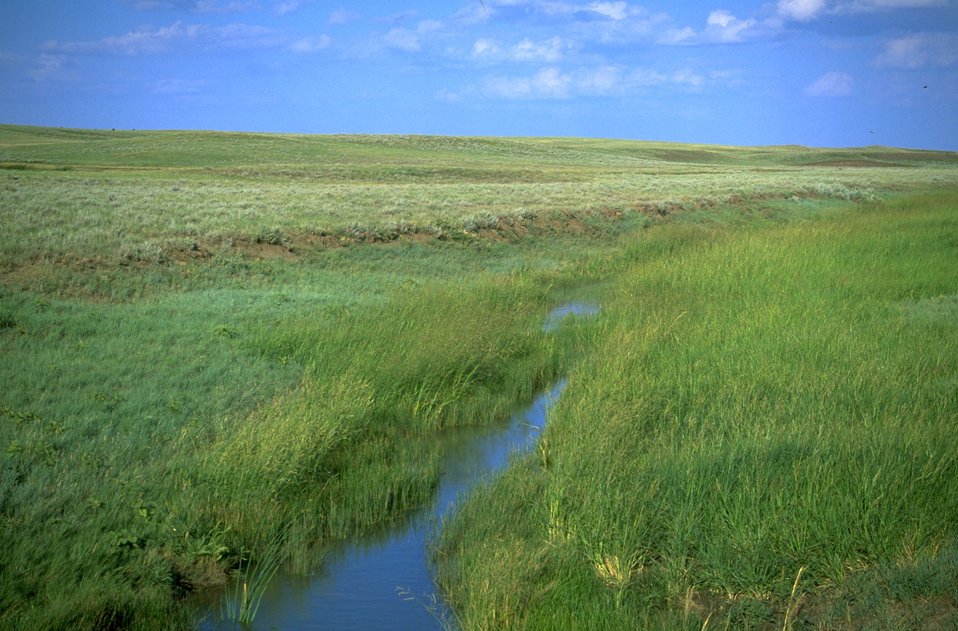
Alkali Creek 40 miles north of Belle Forche